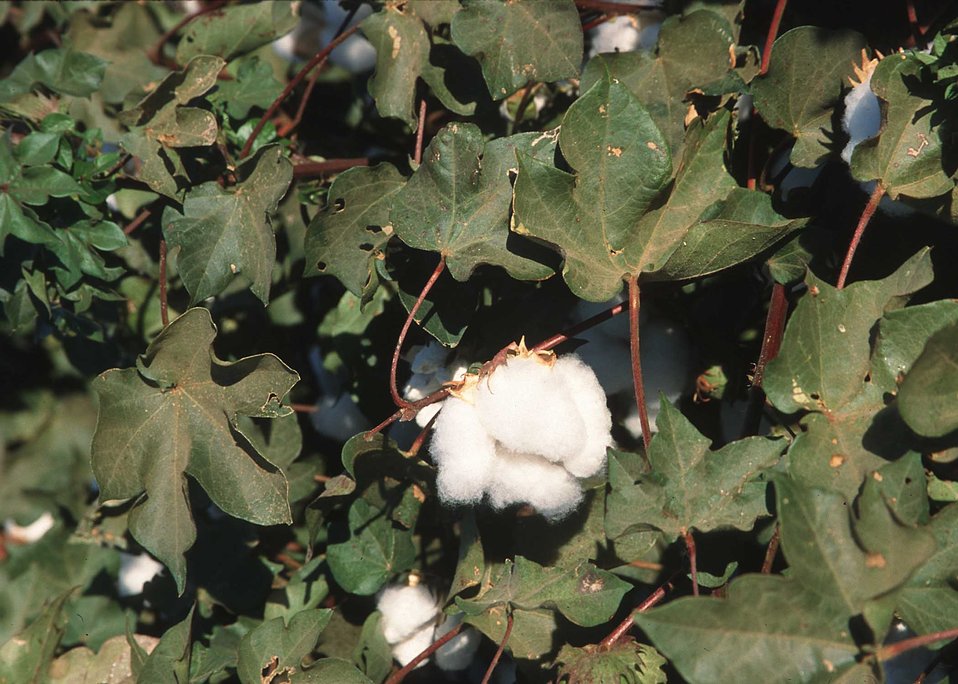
Cotton grown in Northern California.